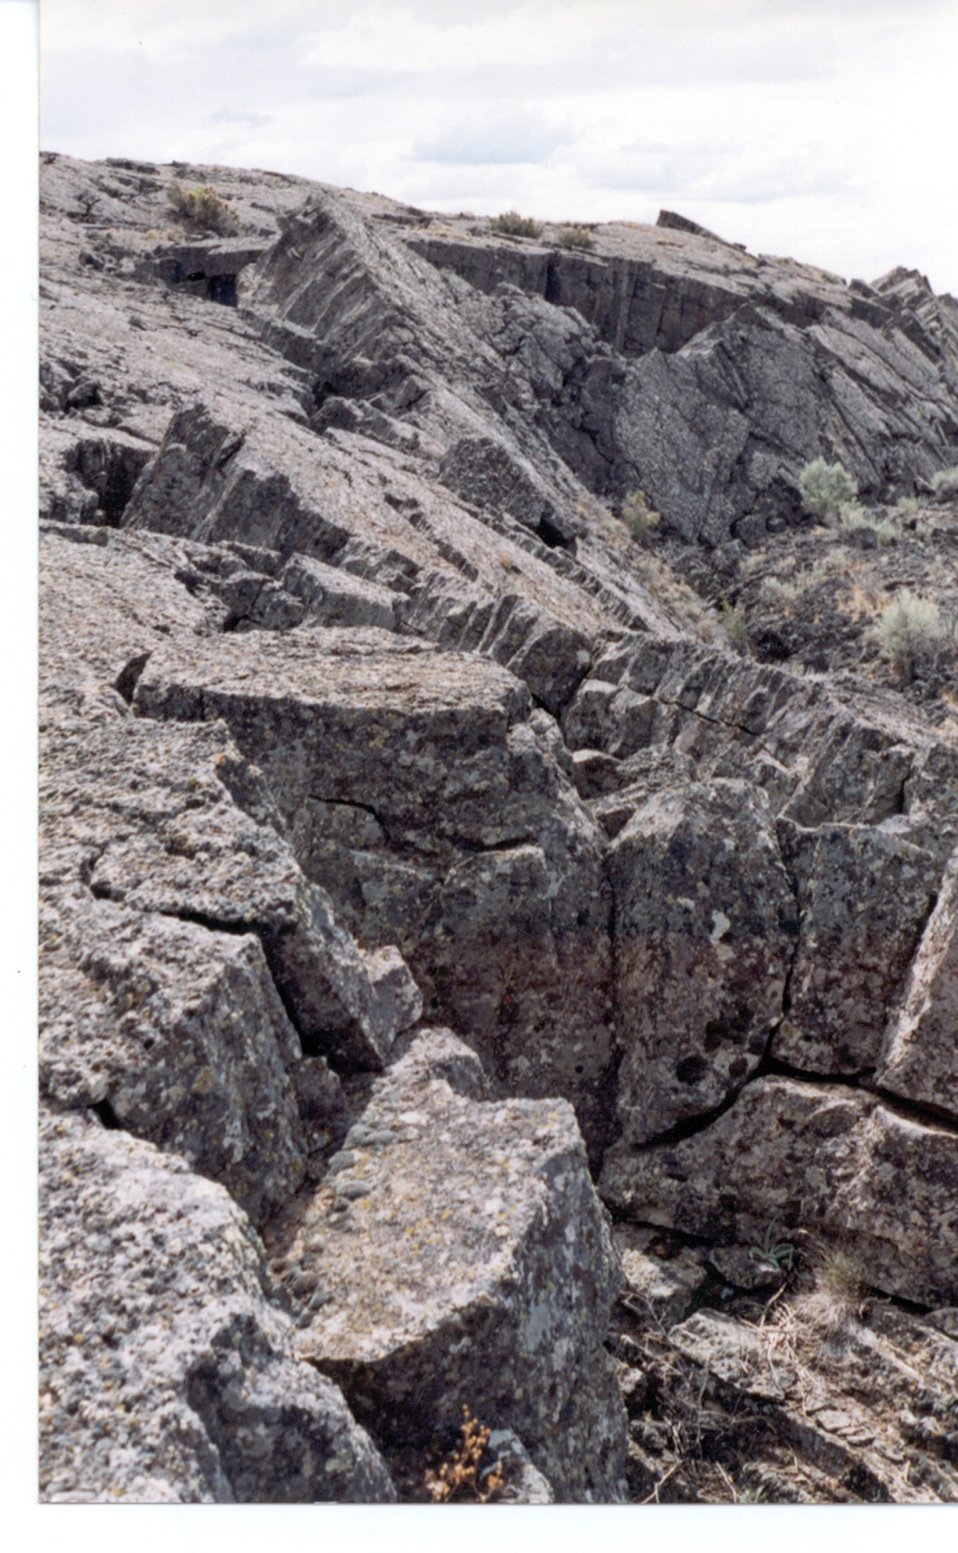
Block Faulting on Wapi Craters of the Moon Shoshone Field Office USRD Upper Snake River District